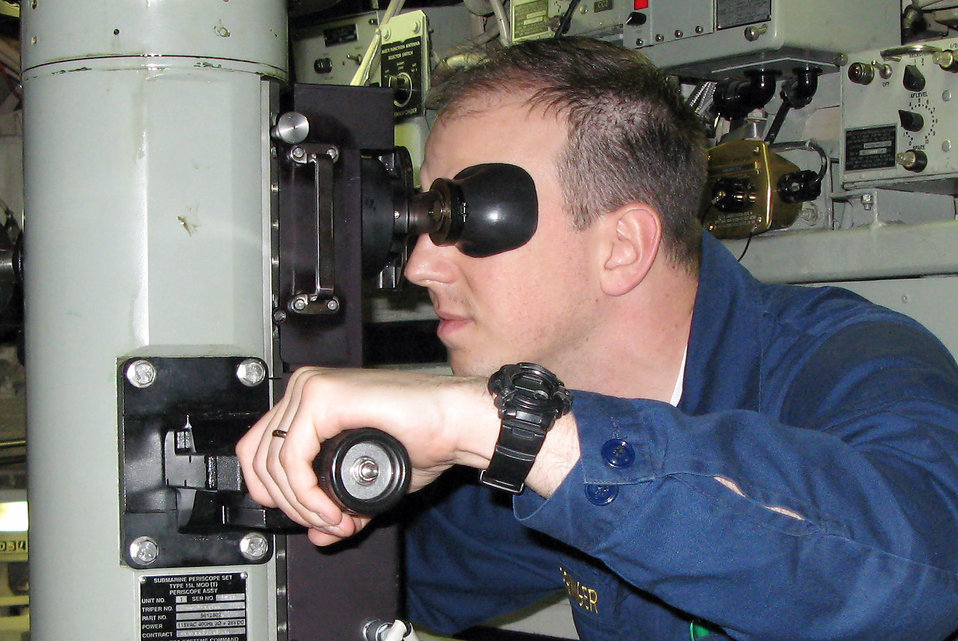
Trident submariners provide strategic deterrence

The USS Maryland's